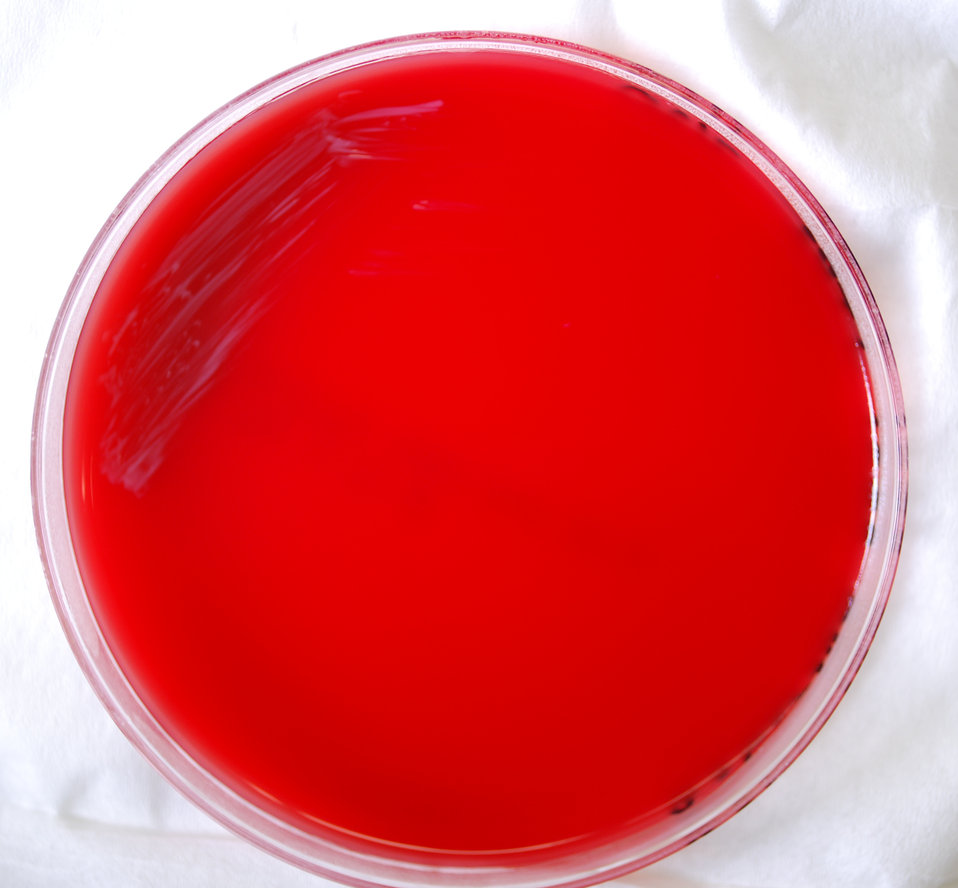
This photograph depicts the colonial morphology displayed by Gram-negative Brucella abortus bacteria, which was grown on a medium of sheep's blood agar (SBA), for a 24 hour time period, at a temperature of 37�C. For a closer view, see PHIL 12206.